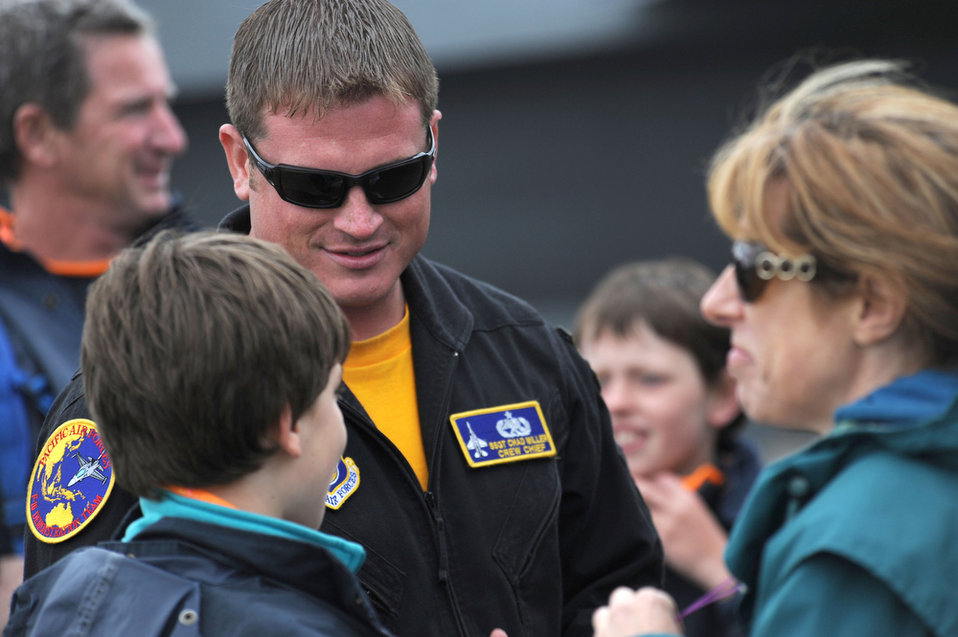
Airmen showcase mission in Australia

Staff Sgt. Chad Miller interacts with visitors March 4, 2011, at the Avalon 2011 Australian International Airshow in Geelong, Australia. Several U.S. Air Force aircraft were displayed at the event including the F-16 Fighting Falcon, the C-17 Globemaster III, the F-22 Raptor and the C-130J Hercules. The event is one of the largest airshows in the world and coincides with a trade exposition. Sergeant Miller is a crew chief with the F-16 Demonstration Team from Misawa Air Base, Japan.